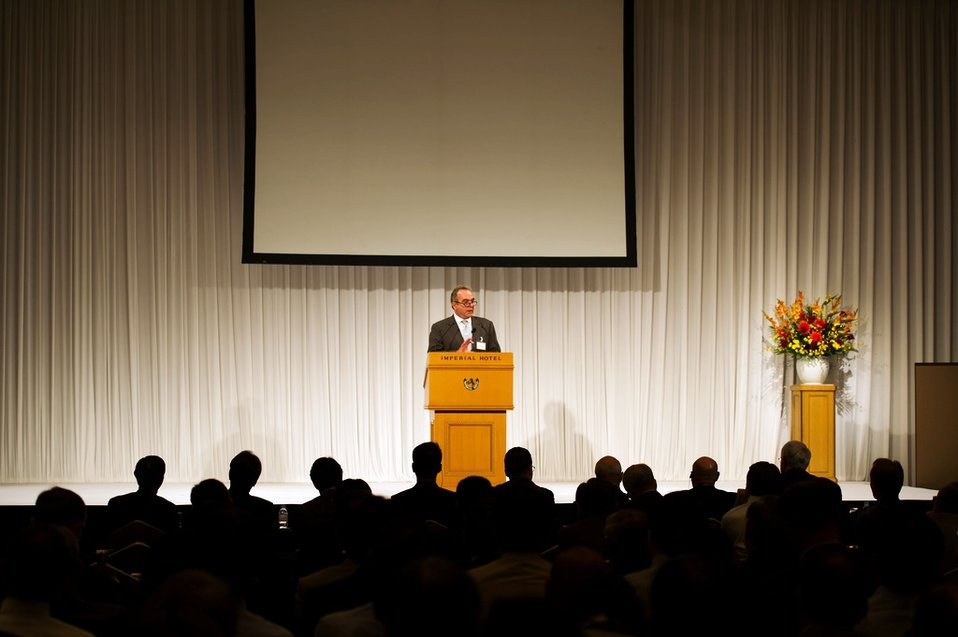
Assistant Secretary Campbell Delivers Remarks on the U.S.-Japan Alliance

Assistant Secretary of State for East Asian and Pacific Affairs Kurt M. Campbell delivers remarks on the strength of the U.S.-Japan alliance and the future of the U.S. Asia-Pacific policy at the Nikkei-CSIS Forum in Tokyo, Japan, October 26, 2012.